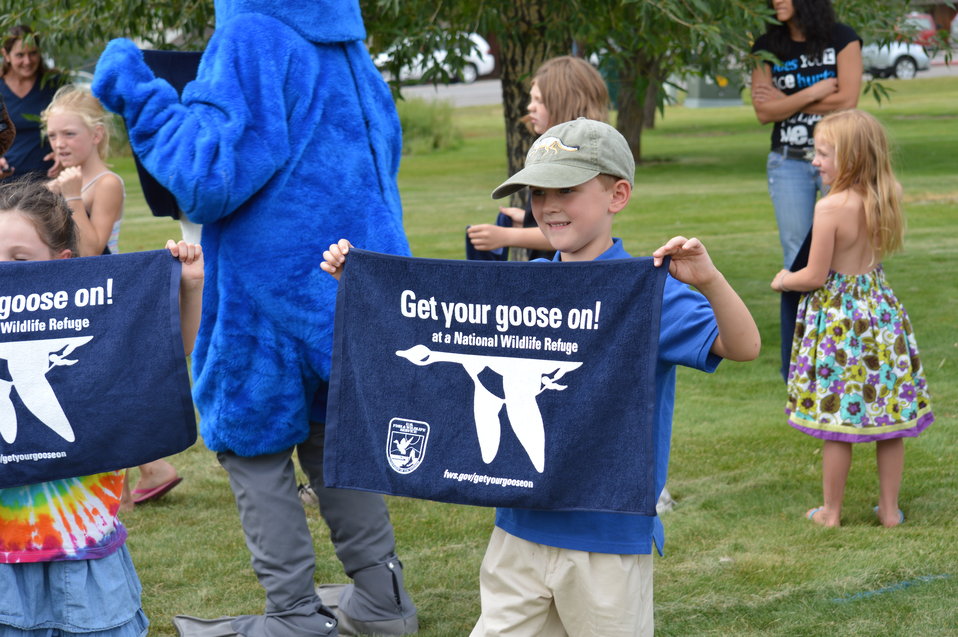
Get Your Goose On! - National Elk Refuge Style

On August 10, 2012 the U.S. Fish and Wildlife Service and Partners celebrated the 100 year anniversary of the establishment of the National Elk Refuge. In these photos, young attendees, along with Puddles the Blue Goose and the National Elk Refuge's mascot, showed us how to Get Your Goose On! with style.